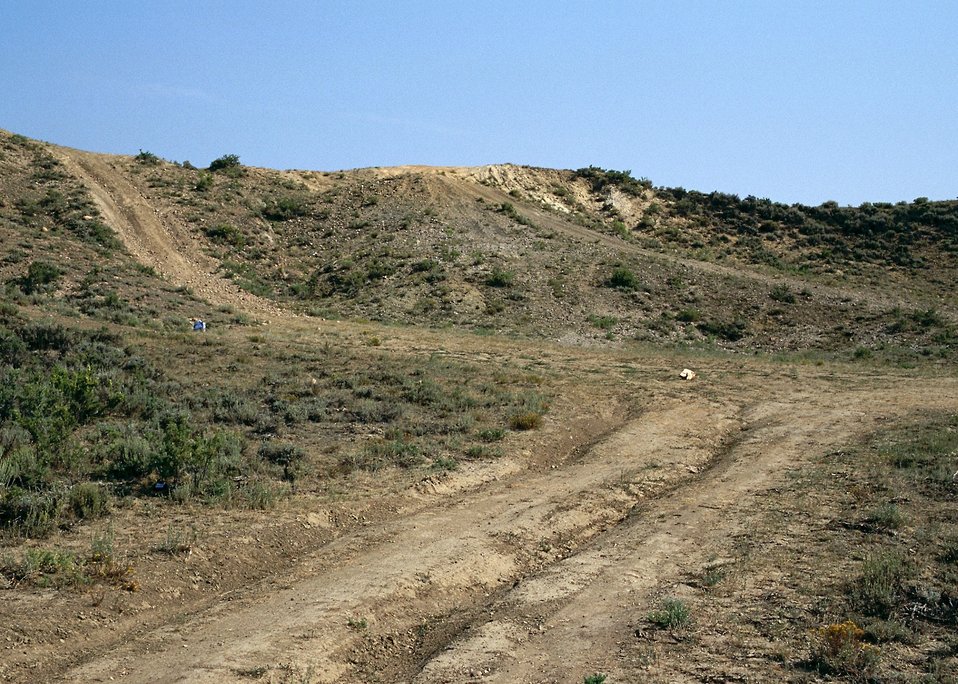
Motorcycle trail